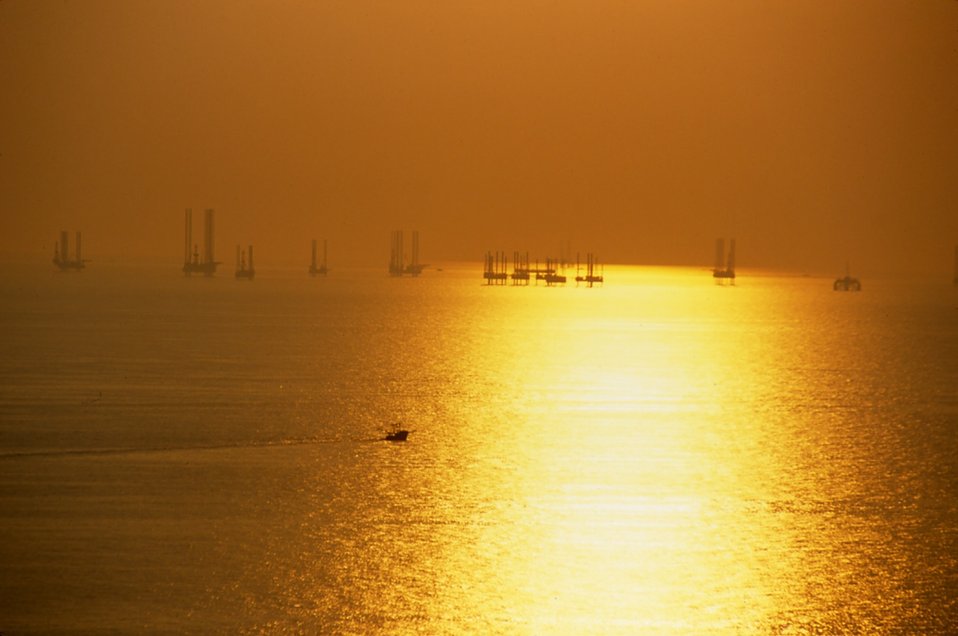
Sunset in the Gulf of Mexico oil patch.